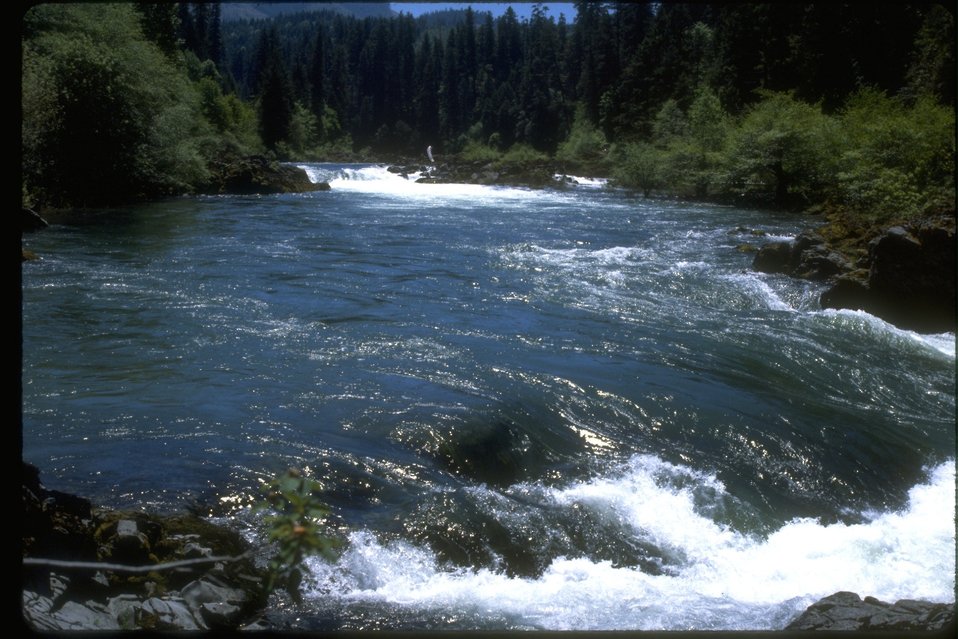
Scenic picture of the North Umpqua River.